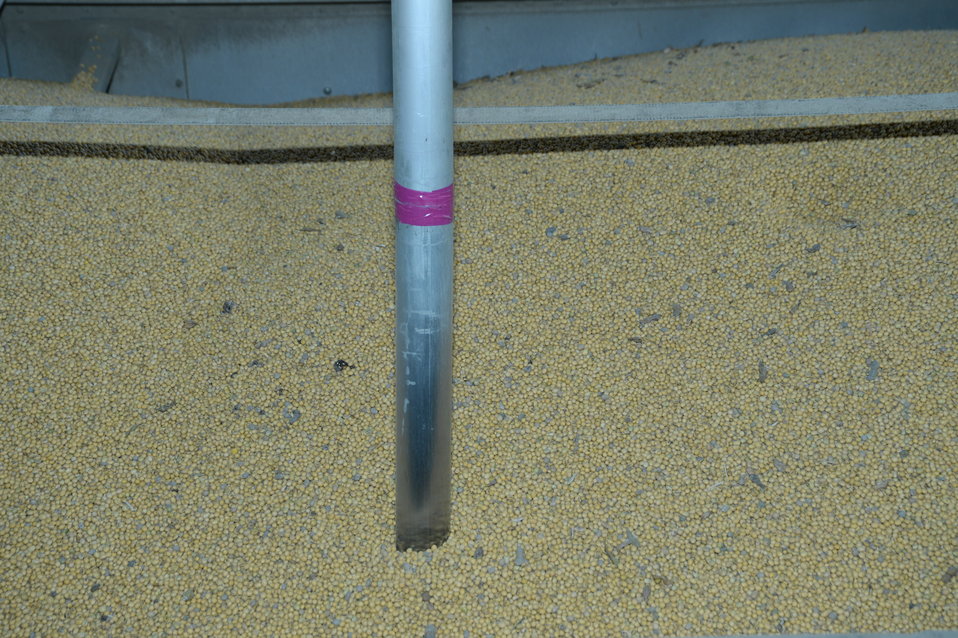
A sample of grain is removed from a barge for testing at the U.S. Department of Agriculture’s (USDA) Grain Inspection, Packers and Stockyards Administration (GIPSA) Federal Grain Inspection Service (FGIS) laboratory in New Orleans, LA on Tuesday, Nov. 19, 2013.